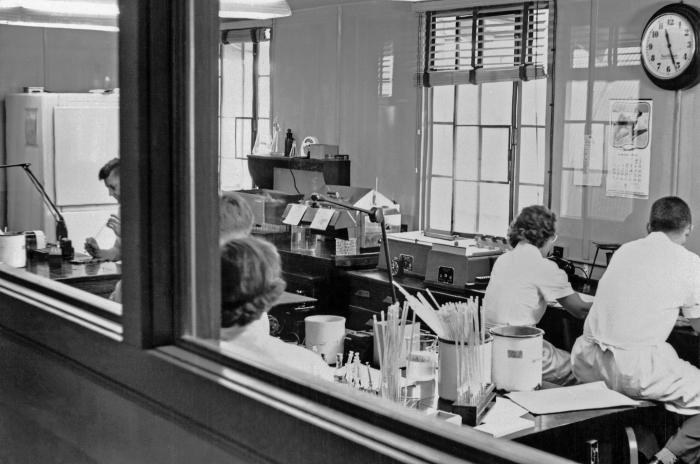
This 1952 photograph showed Centers for Disease Control employees performing laboratory research in a facility on the organization's Chamblee, Georgia Campus, which can be found in Northeast Atlanta.